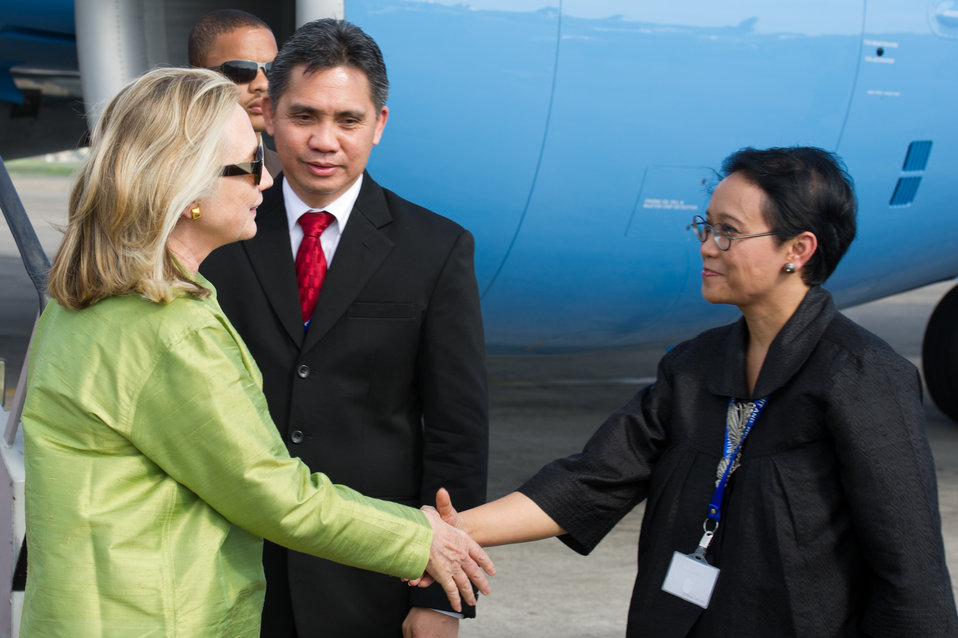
Secretary Clinton Is Greeted By Indonesian Foreign Ministry Director Marsudi

U.S. Secretary of State Hillary Rodham Clinton is greeted by Indonesian Foreign Ministry Director General Ms. Retno Marsudi upon her arrival to Bali, Indonesia, for the ASEAN and East Asian Summits on November 17, 2011. Also pictured in the photo is Indonesian Director of Protocol Harry Kandou, center.